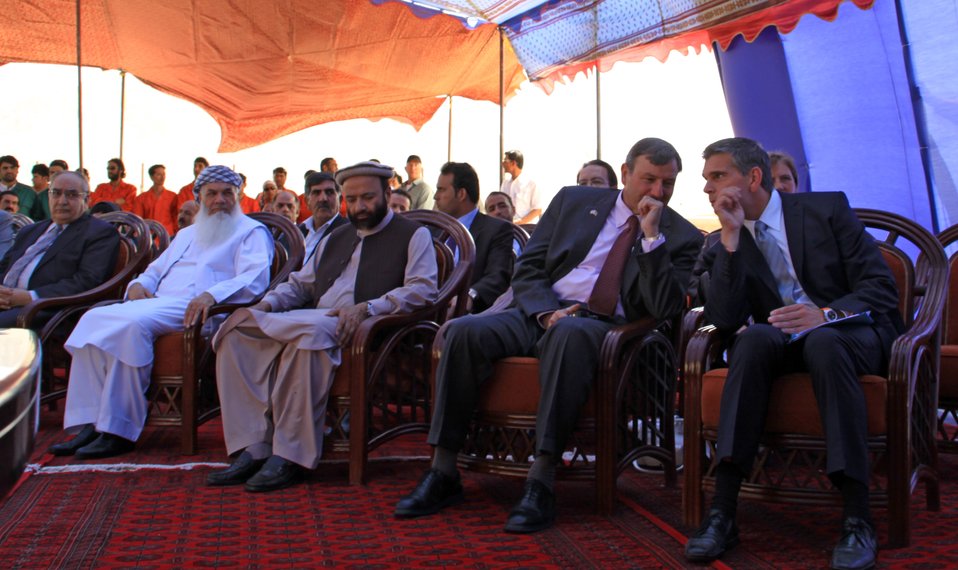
105 MW Tarakhil Power Plant Handover